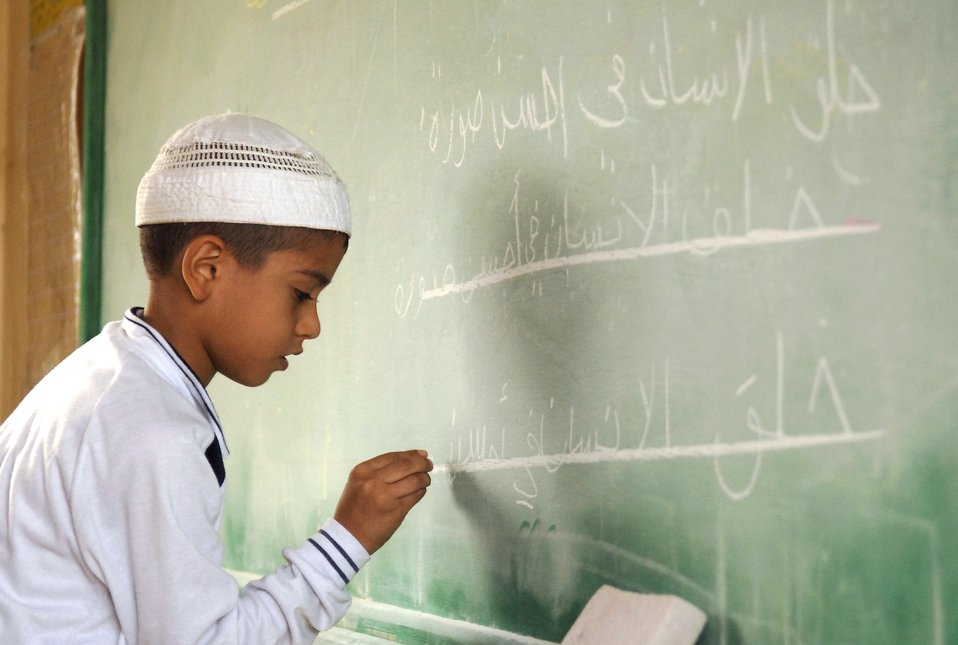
Iraqi students receive school supplies

A young Iraqi boy practices his writing at a primary school in the Bayaa District of Baghdad, Iraq, Oct. 31, 2006.